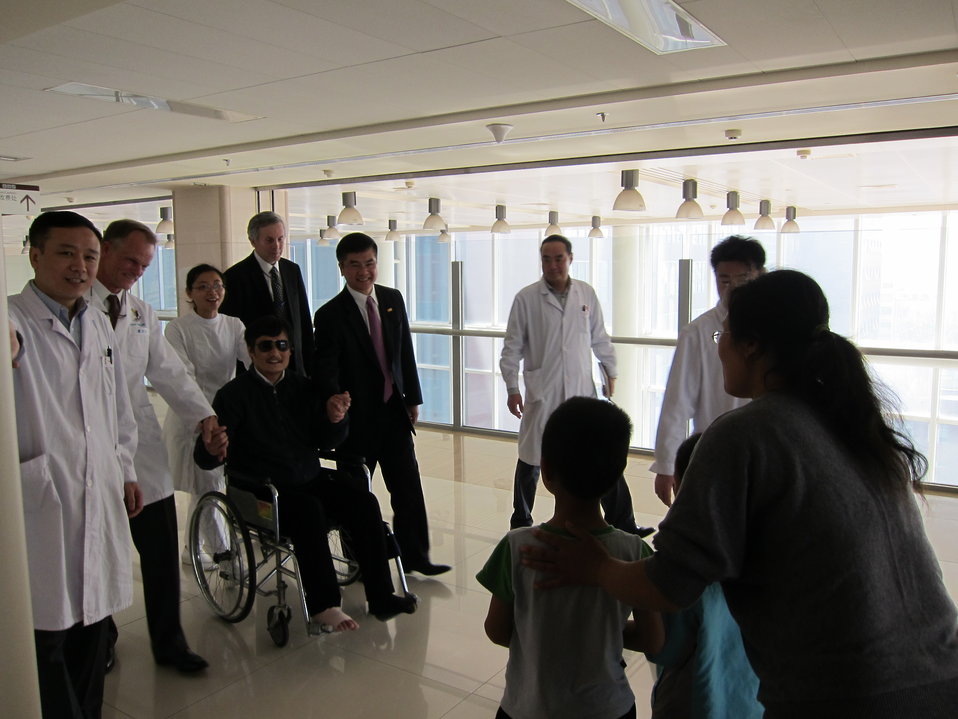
Chen Guangcheng With His Wife and Children

Chen Guangcheng with his family at a hospital in Beijing, China, on May 1, 2012. U.S. Ambassador to China Gary Locke, James Brown, and Regional Medical Officer Wayne Quillin are also pictured.